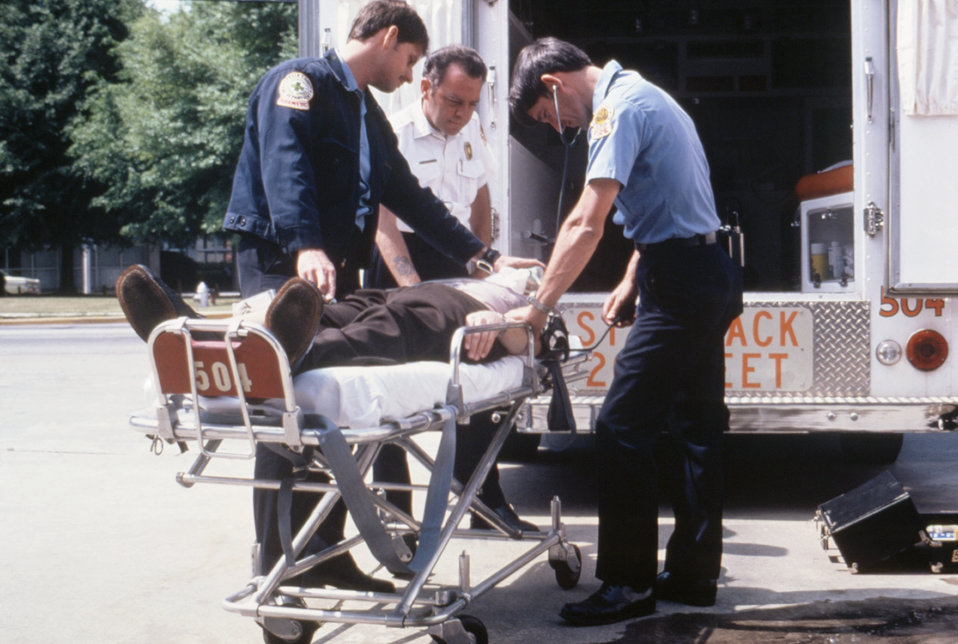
This photograph shows a patient being cared for by Emergency Medical Technicians (EMTs), about to be placed in an ambulance.